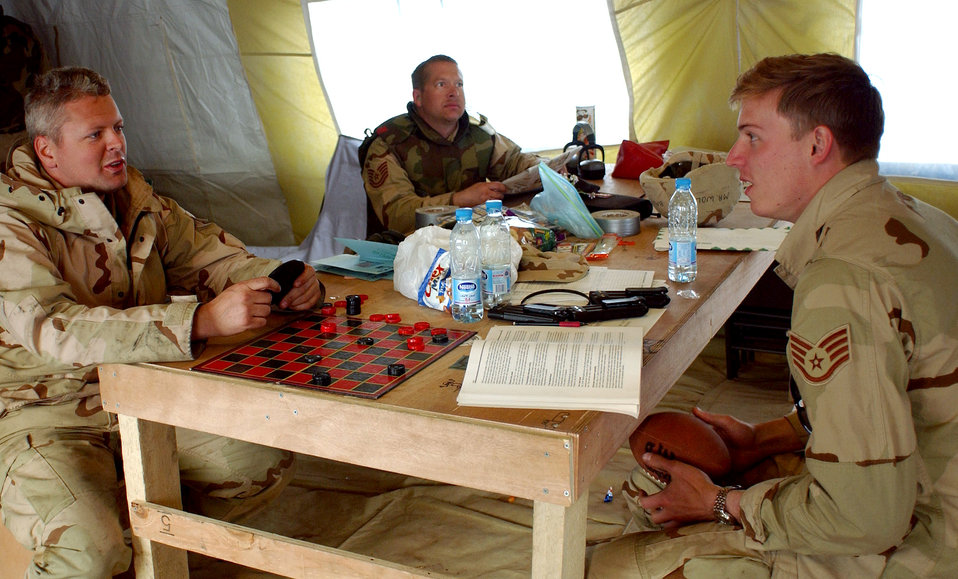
A moment's rest

OPERATION IRAQI FREEDOM -- F-16 Fighting Falcon crew chiefs relax while their aircraft are flying combat sorties supporting Operation Iraqi Freedom. Forward deployed in an undisclosed location, the 410th Air Expeditionary Wing is responsible for critical sorties flown in support of Operation Iraqi Freedom.